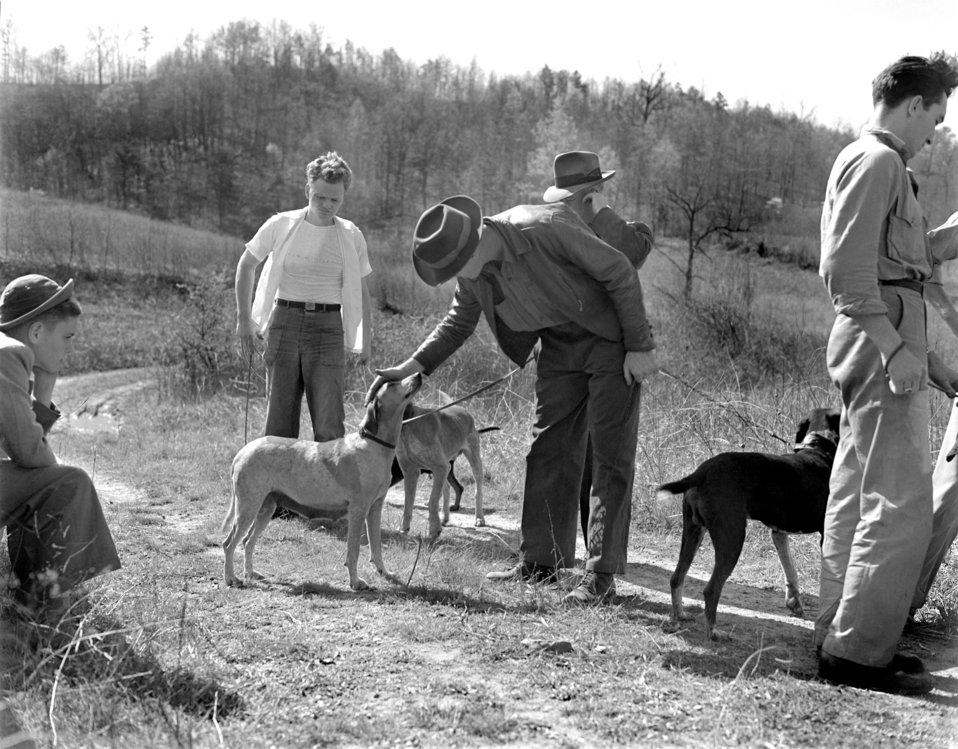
Coon Hunt (Raccoon Hunting) Oak Ridge 1947

3400-6a DOE photo Ed Westcott 4-12-1947 Oak Ridge Tennessee